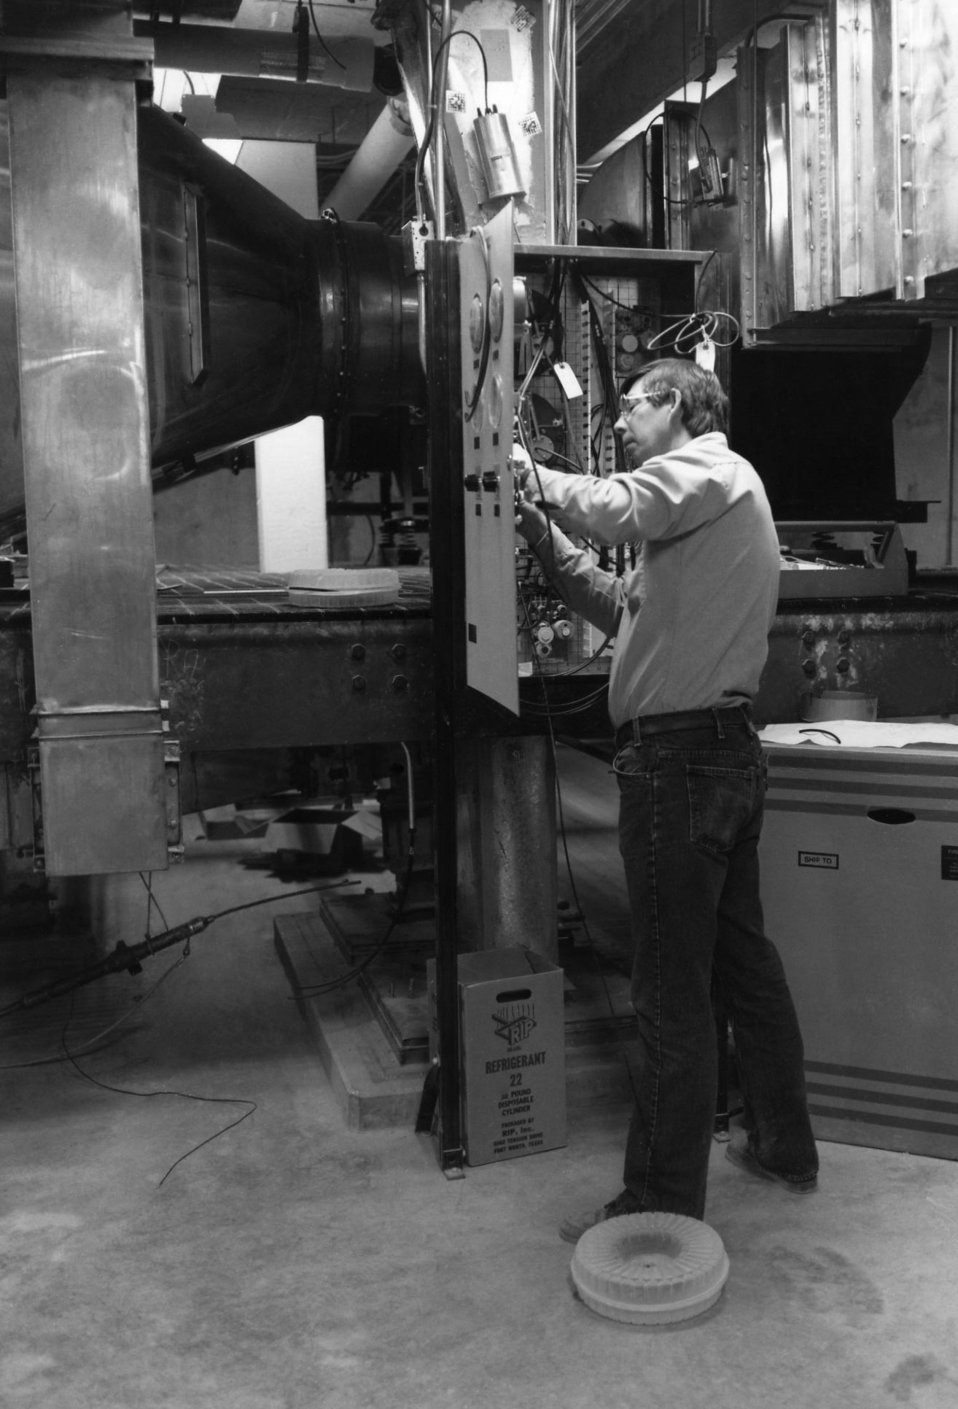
This photograph, taken in the mid 1980s, showed a Centers for Disease Control electrician as he was working in the newest virology laboratory located on the CDC's Clifton Road, Roybal Campus in Atlanta, Georgia.